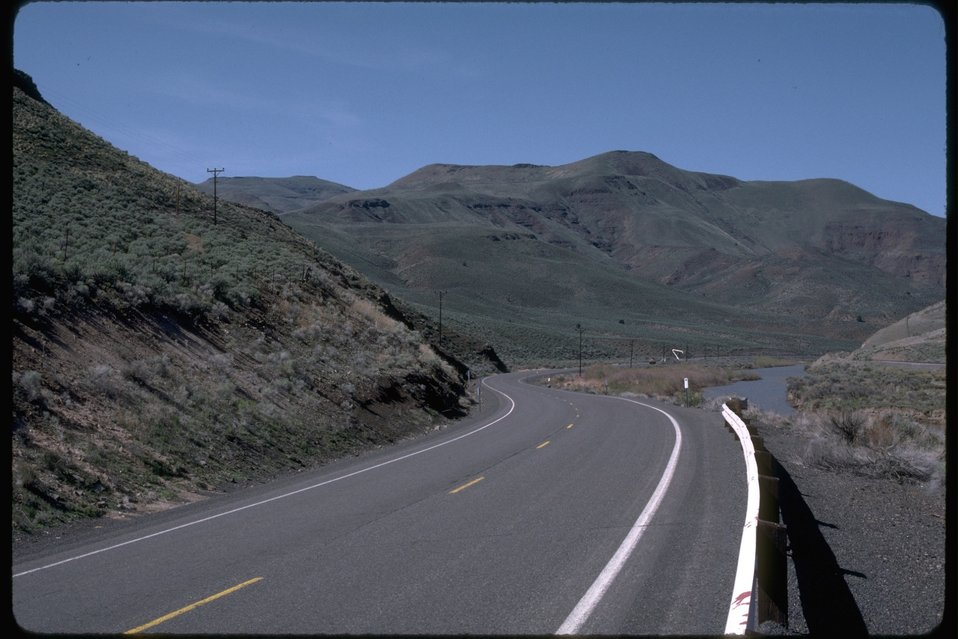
State highway with river road right-of-way in the Gold Creek Wilderness Study Area. OR 3-33.